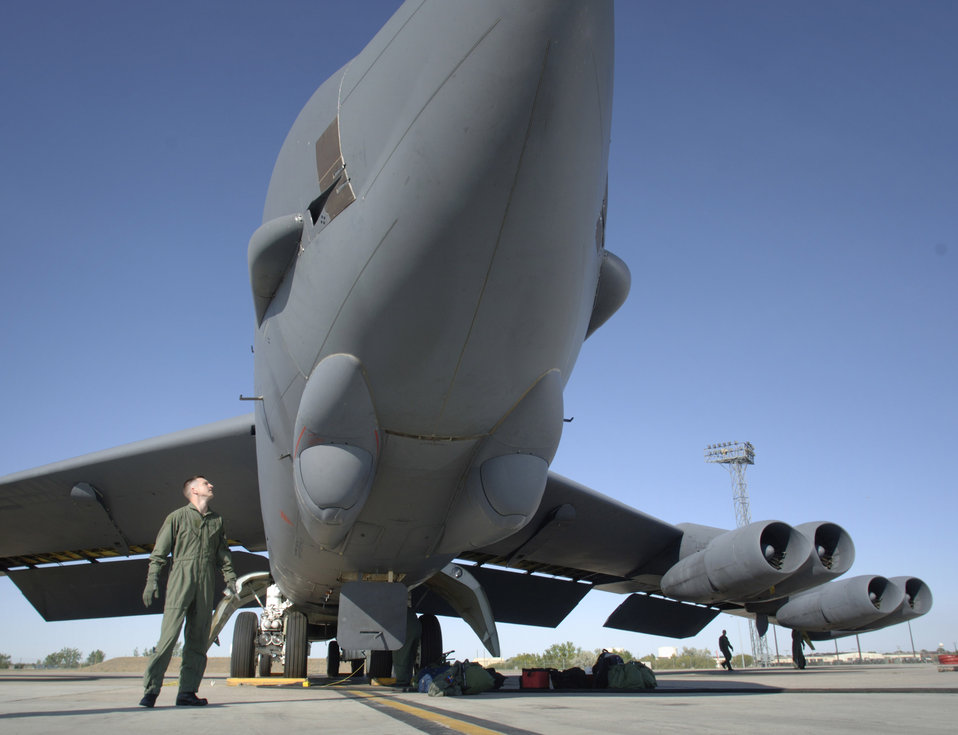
B-52 Stratofortress ages like wine

Capt. Patrick Hook performs a walk-around inspection of a B-52 Stratofortress bomber Aug. 22 at Minot Air Force Base, N.D. Captain Hook, from Muskegon, Mich., is with the 23rd Bomb Squadron.